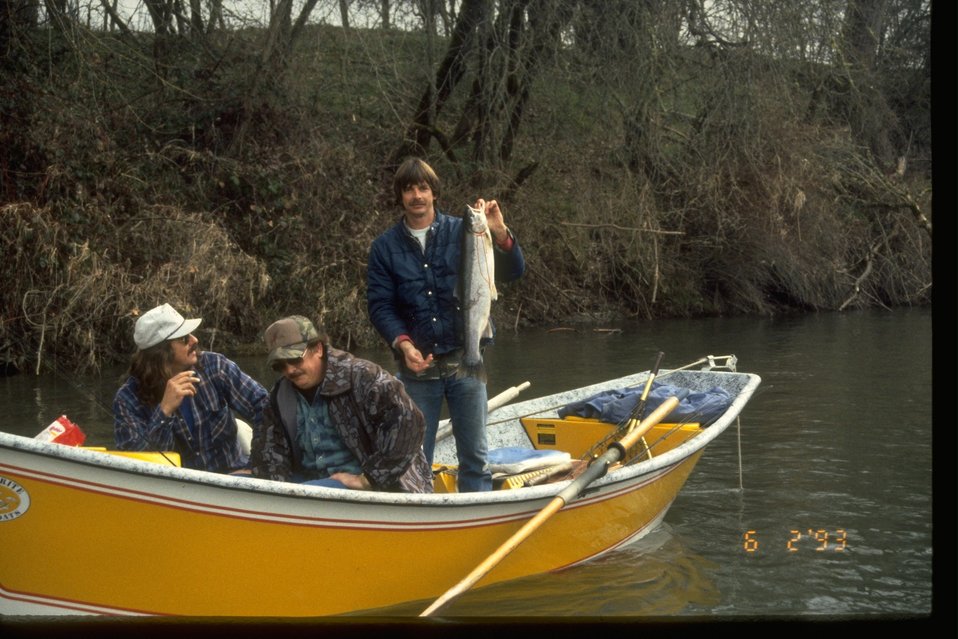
Two rafts next to each other on the wild section of the Rogue River.